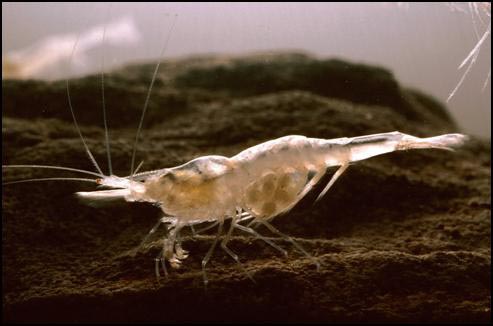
Kentucky cave shrimp (Palaemonias ganteri)

USFWS Headquarters
Status: Endangered